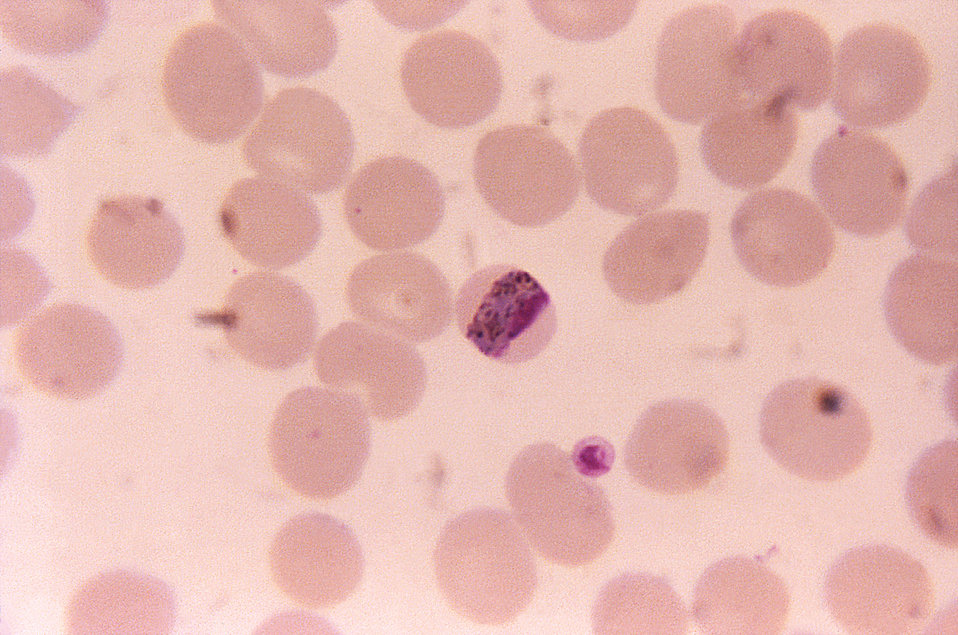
This Giemsa stained thin film blood smear micrograph depicts a 'band form' Plasmodium malariae trophozoite.